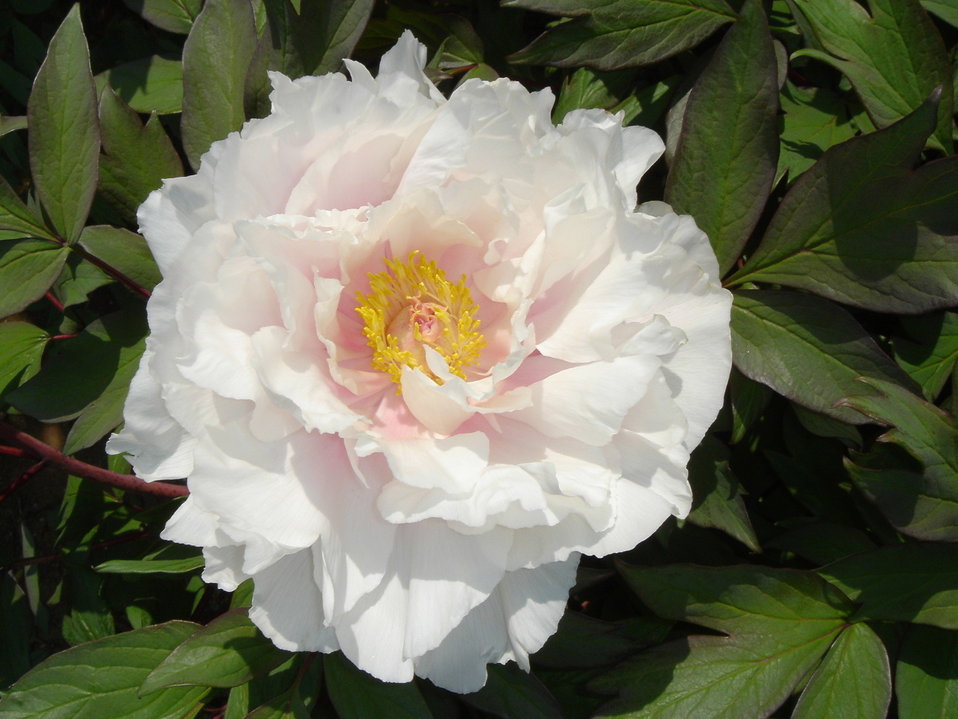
Paeonia suffruticosa1